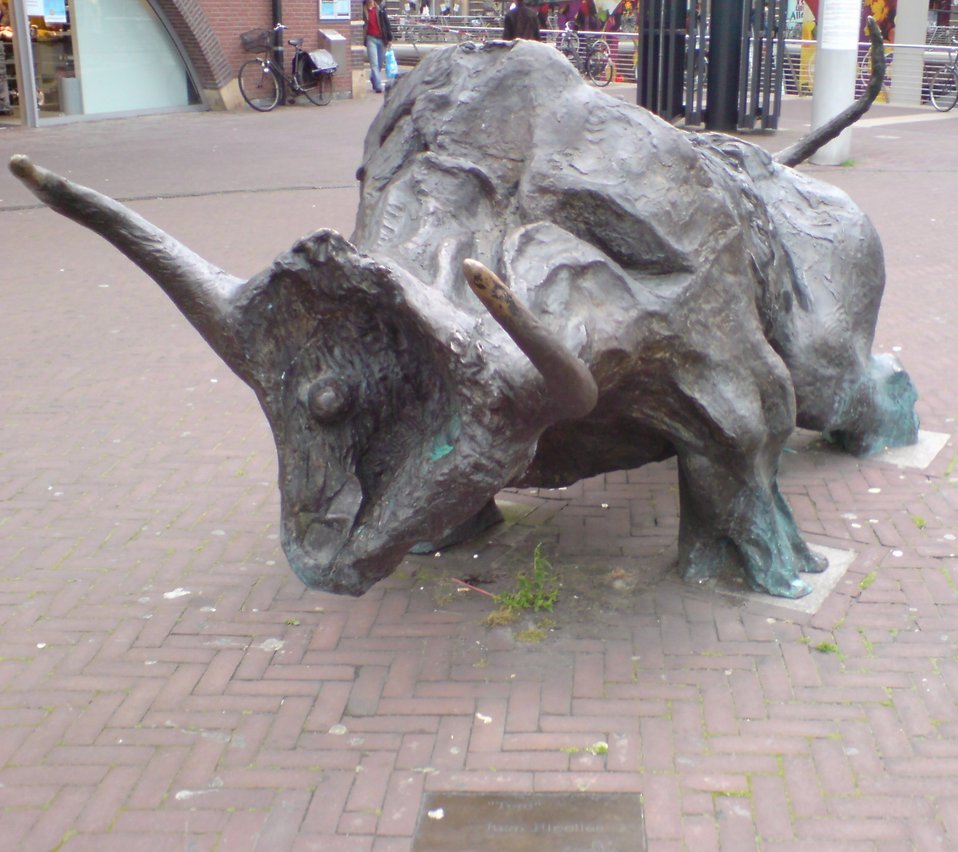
Te bullock (Toro) in 's-Hertogenbosch, the Netherlands. Made by Juan Ripollés in 2001. Placed in 2002 at the Coronade (Burgemeester Loeffplein).